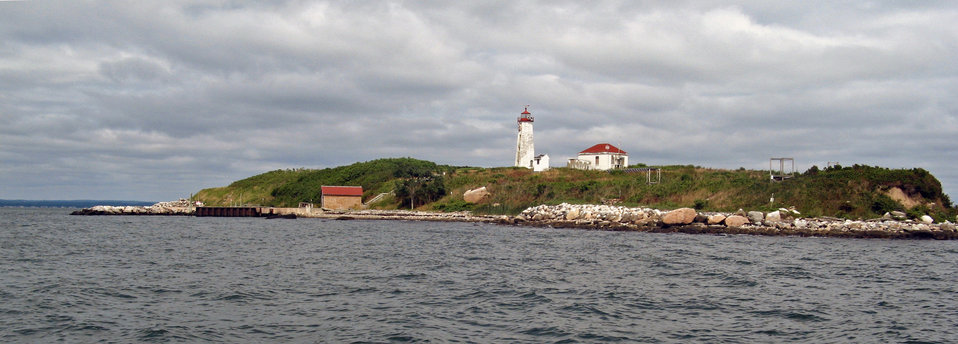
Falkner Island research station lighthouse

Stewart B. McKinney National Wildlife Refuge, CT.